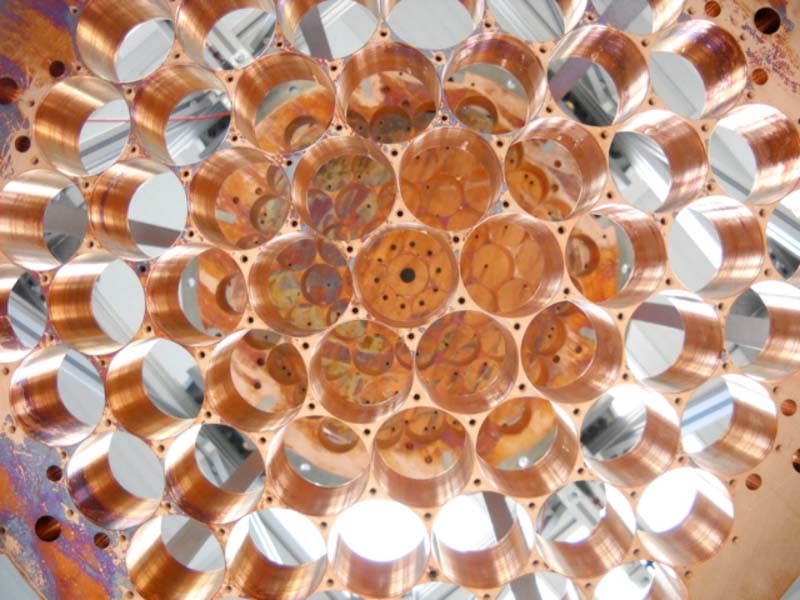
Shown is a top-down view of the Lawrence Livermore National Laboratory-designed and built copper photomultiplier tube mounting structure, which is a key component of the LUX detector.